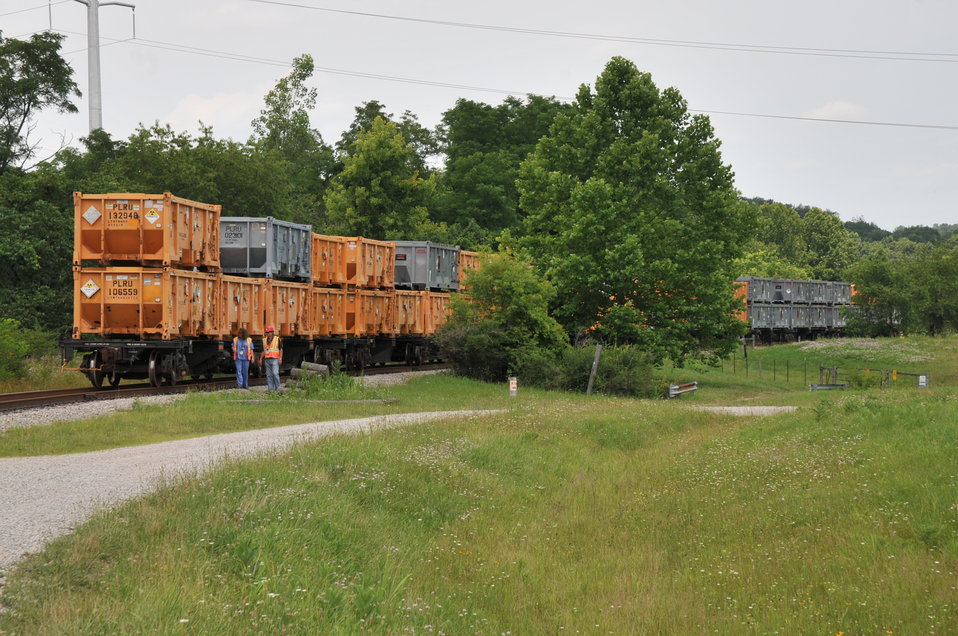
Intermodal containers leaving the Portsmouth site

Intermodal containers can be used with a variety of transportation methods (truck, rail, ship, etc.).